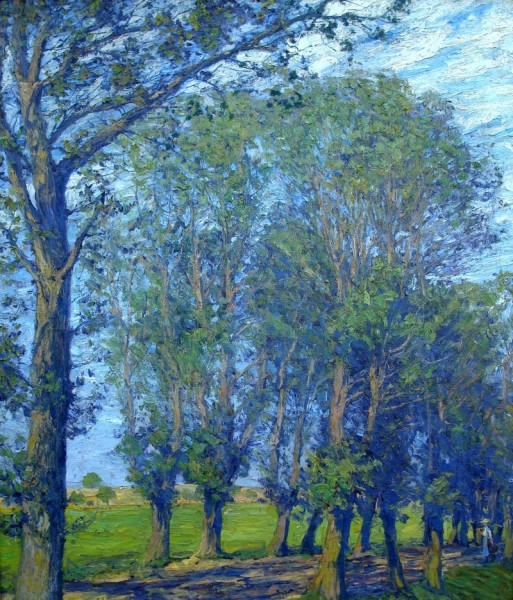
Sommerabend (Pappelallee), um 1910, Öl auf Leinwand, 109 x 93 cm